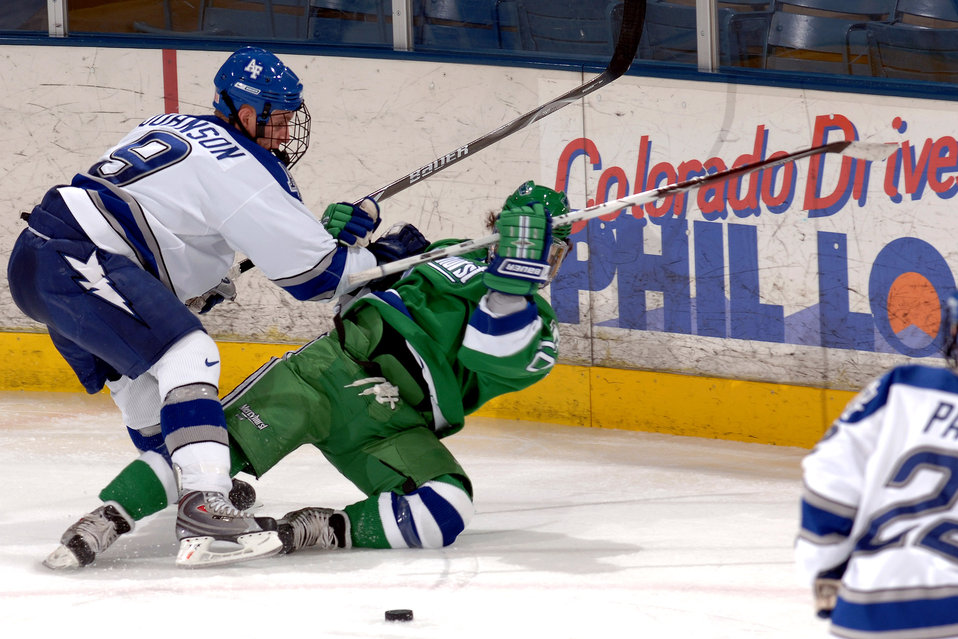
Hockey: Falcons score five in the third for 6-2 win

U.S. Air Force Academy sophomore defenseman Brandon Johnson jostles for the puck with Mercyhurst left wing Nick Vandenbeld Nov. 2 at the Cadet Ice Arena in Colorado. The Lakers took the opener of the two-game weekend series, 5-3, but the Falcons grabbed the second, 6-2.